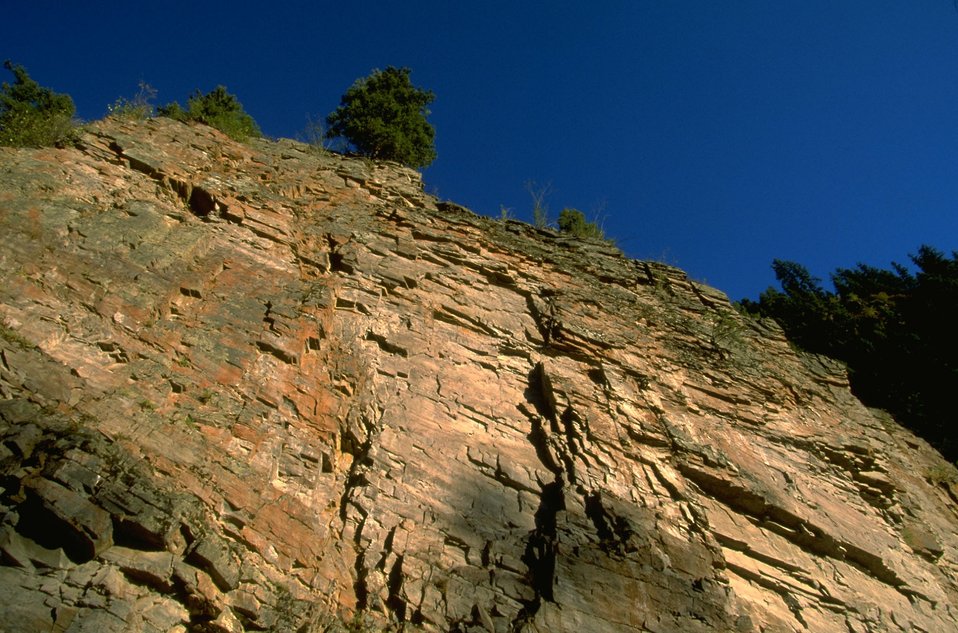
Cliffs along the Blackfoot River